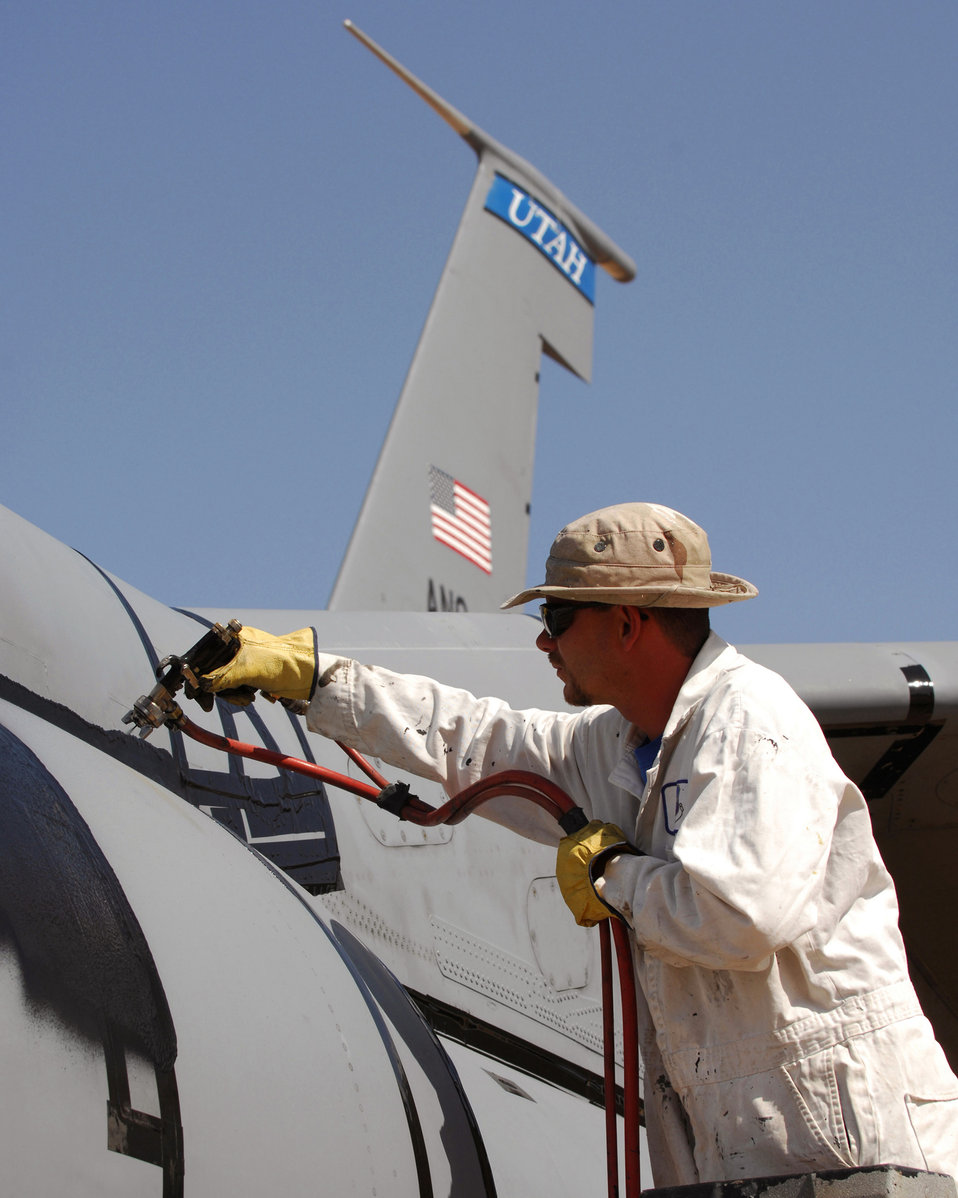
Last KC-135E retires, Air Force officials focus shifts to KC-X

Sam Wilkins prepares an Air Force KC-135E Stratotanker for preservation and storage in April 2008 at Davis-Monthan Air Force Base, Ariz. The 50-year-old aircraft was delivered to the group for long-term storage at the 2,600-acre facility. Mr. Wilkins is a spray-lat technician with the 578th Storage and Disposal Squadron.